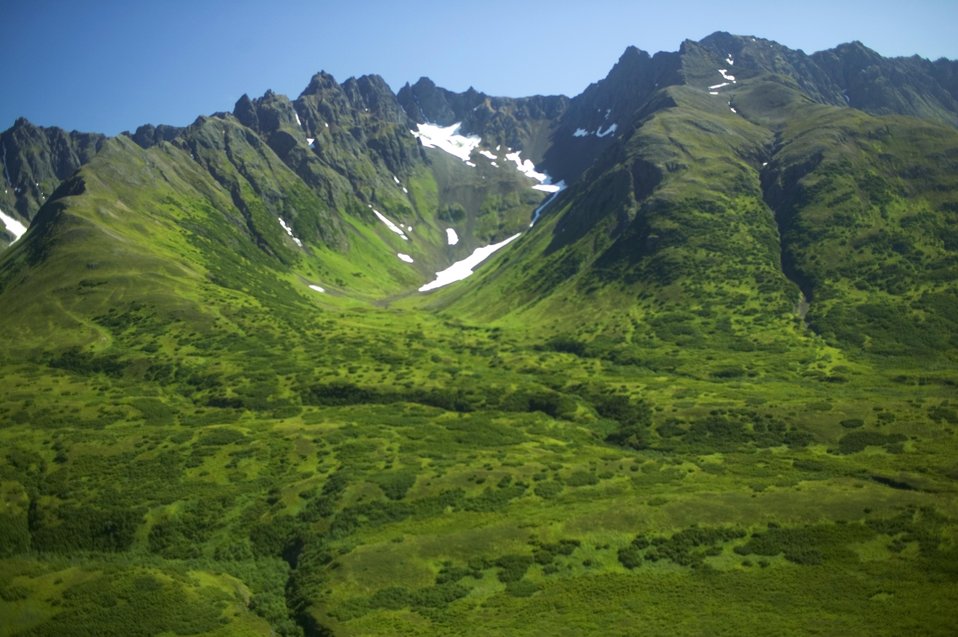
Togiak Nation Wildlife Refuge